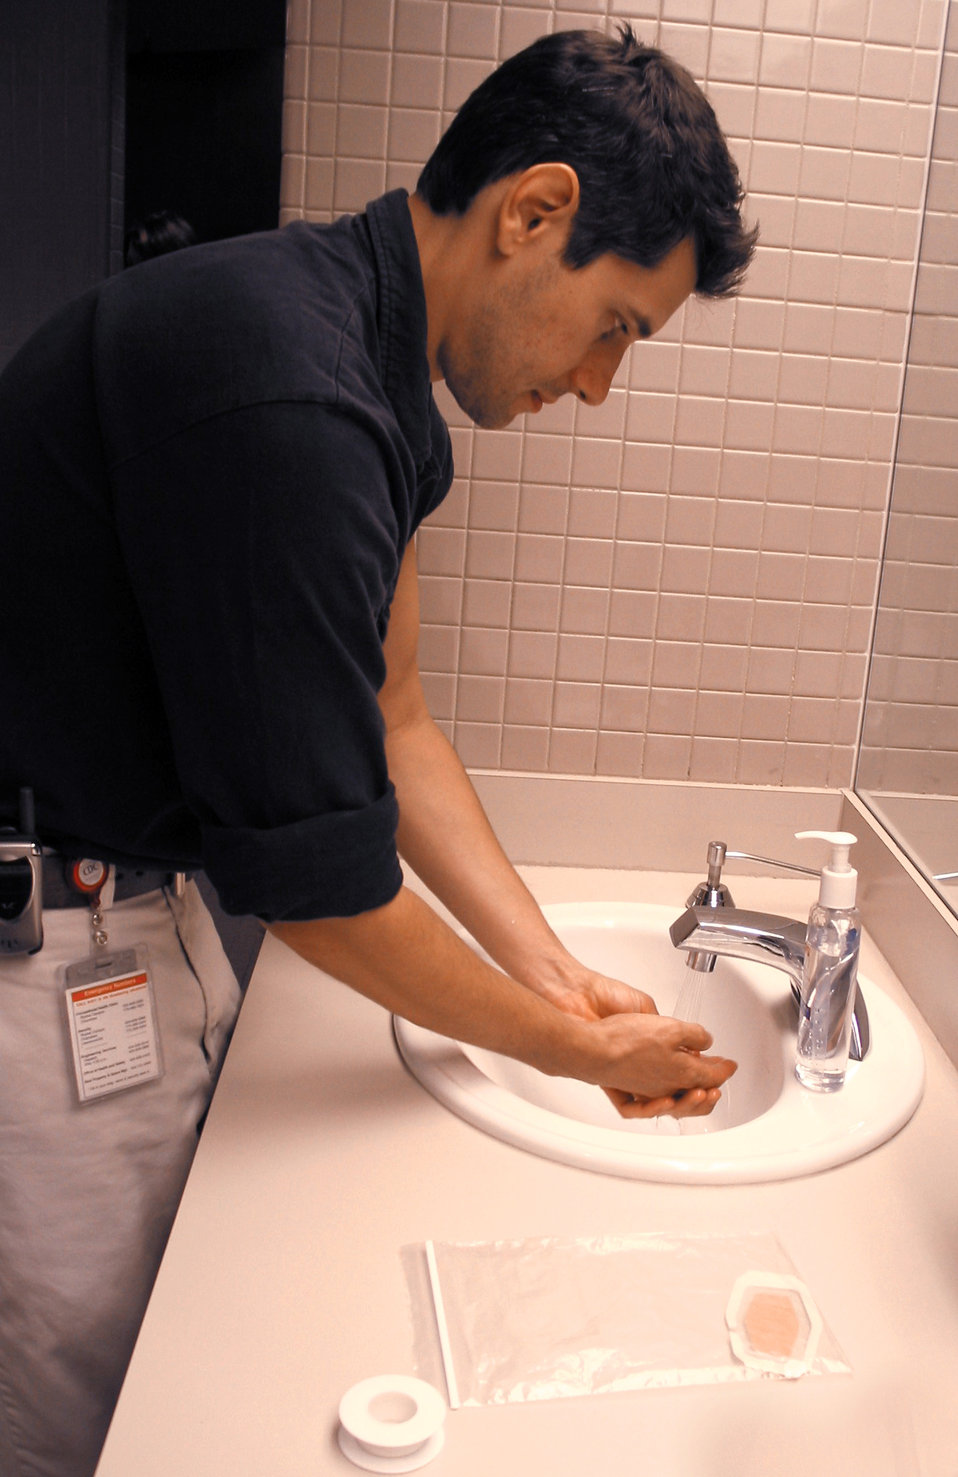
This image demonstrates how a smallpox vaccinee washes his hands after handling his vaccination site bandage.